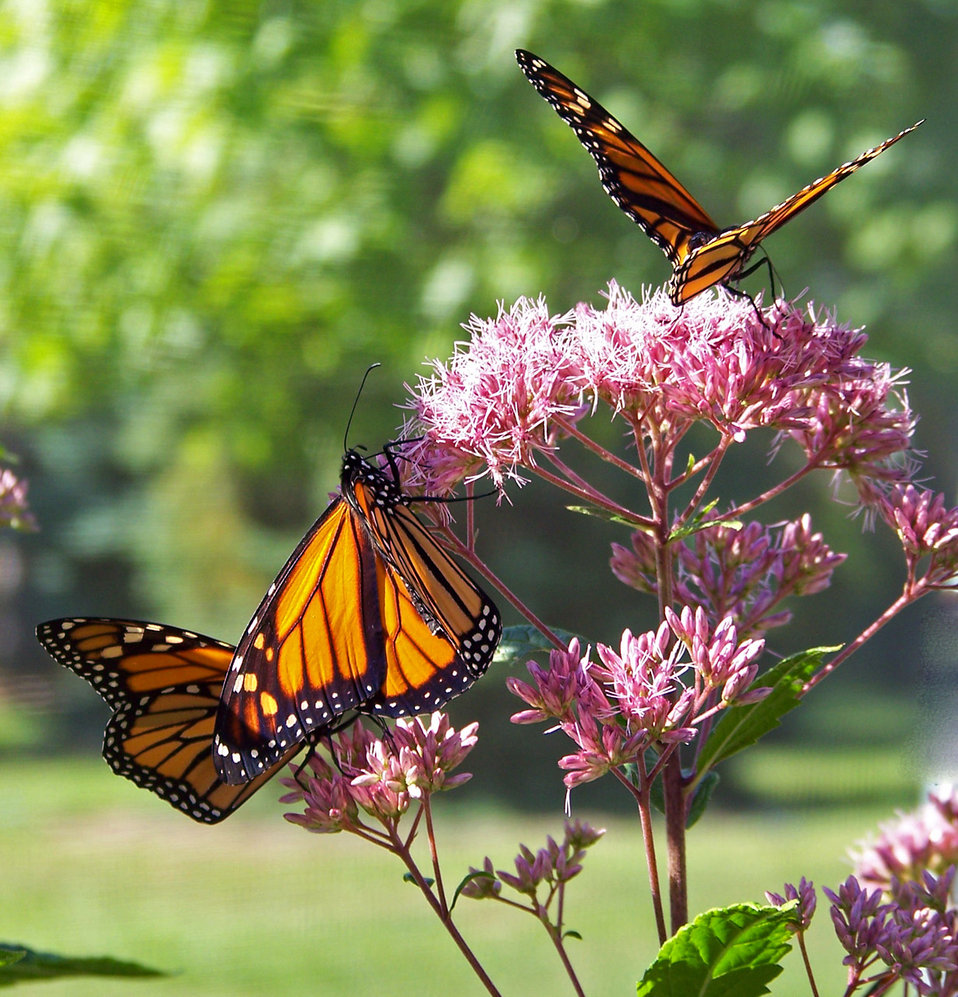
Butterflies on flowers

Monarch butterflies on pink flowers.